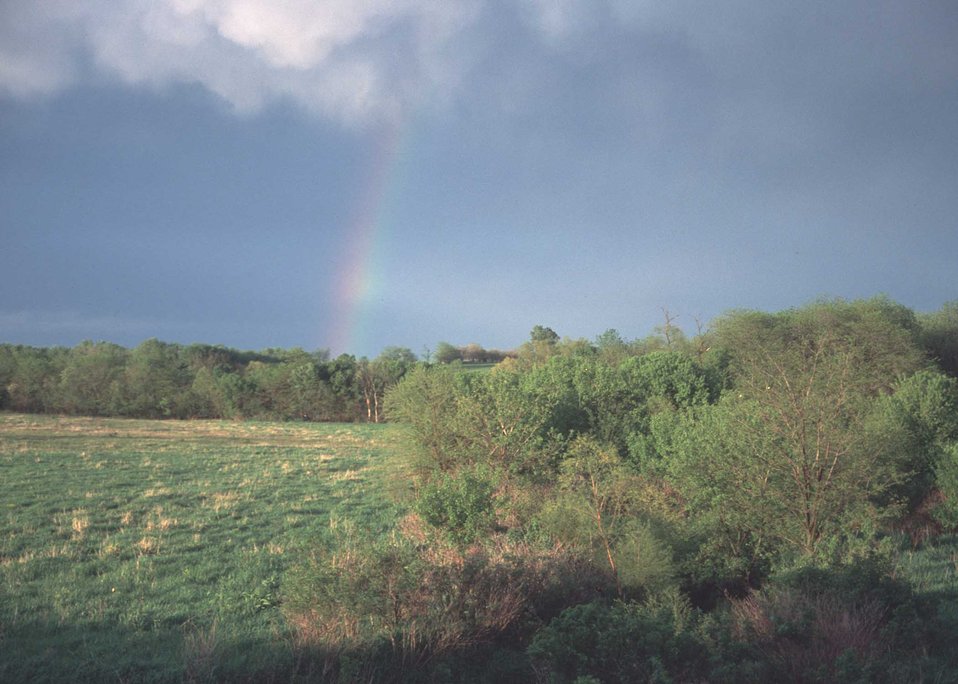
A riparian area within a pasture at the end of a rainbow in southeastern Iowa.